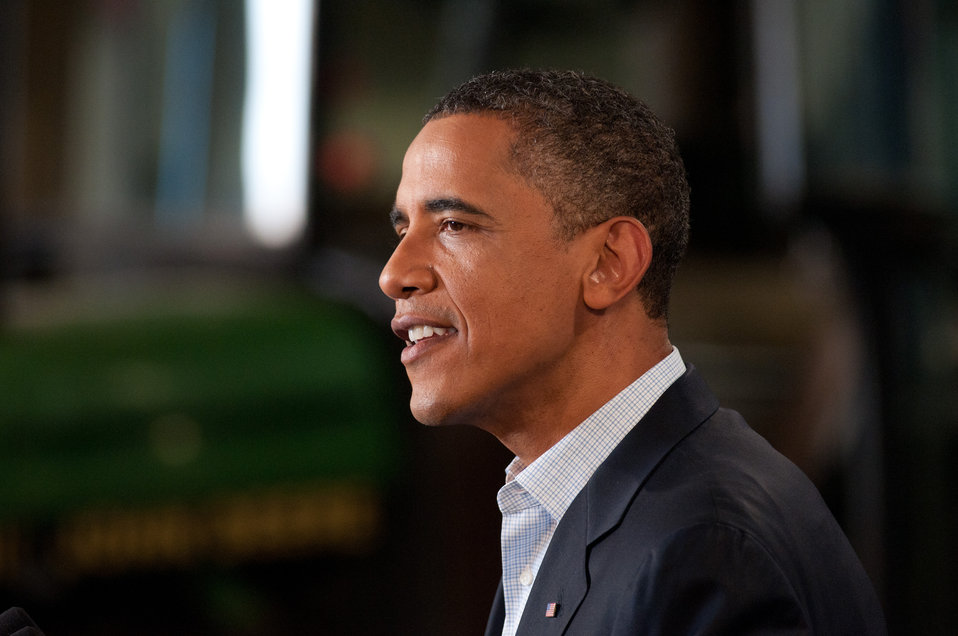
President Barack Obama speaking at the Northeast Iowa Community College, for a White House Rural Economic Forum on Tuesday, August 16, 2011. The President’s visit will focus on agriculture’s contribution to the national economy, and how to create more jobs in rural America.